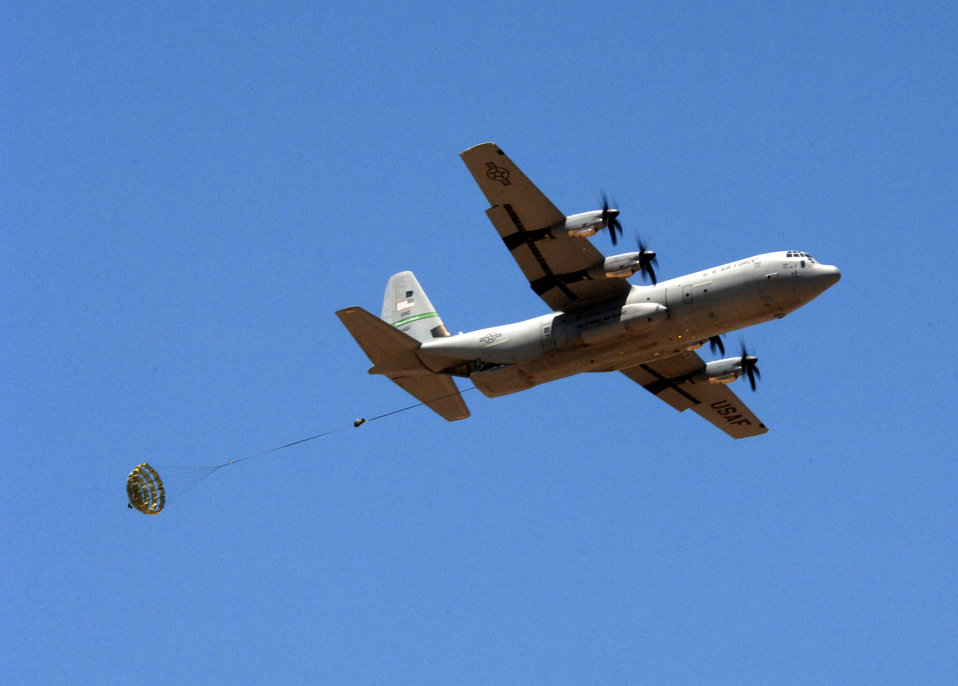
Pallet drop over California

A C-130J Hercules flying over Edwards Air Force Base, Calif., on Sunday, April 30, 2006, deploys a drogue parachute that will extract a Type 5 heavy pallet. The mission was part of a test to certify the aircraft's capability to drop this type of pallet. Guard, Reserve and active-duty aircrews from Channel Islands Air National Guard Base, Calif.; Little Rock AFB, Ark.; and Keesler AFB, Miss., participated in the certification. This was the first time the